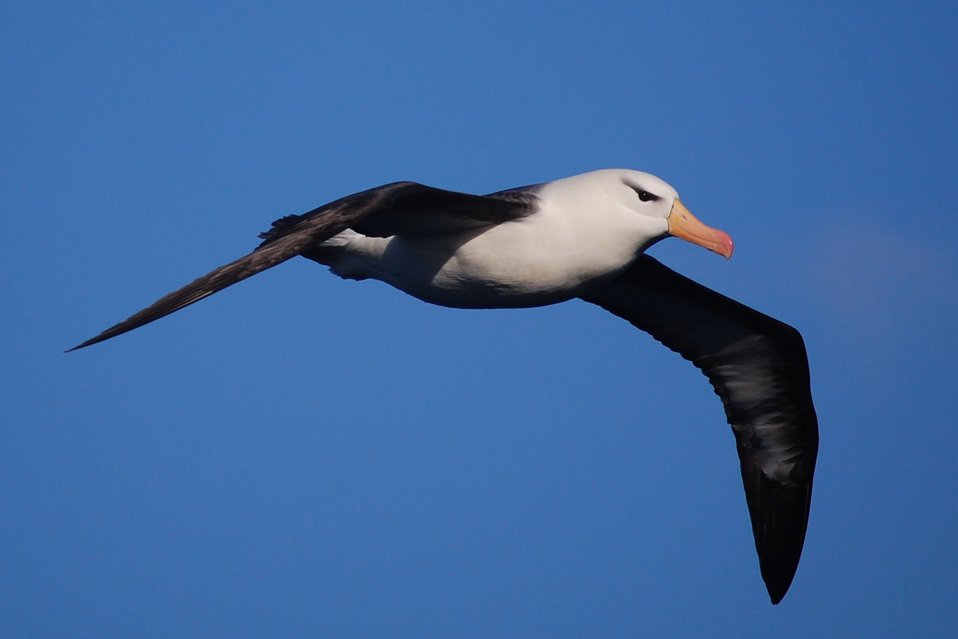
Black-browed albatross.